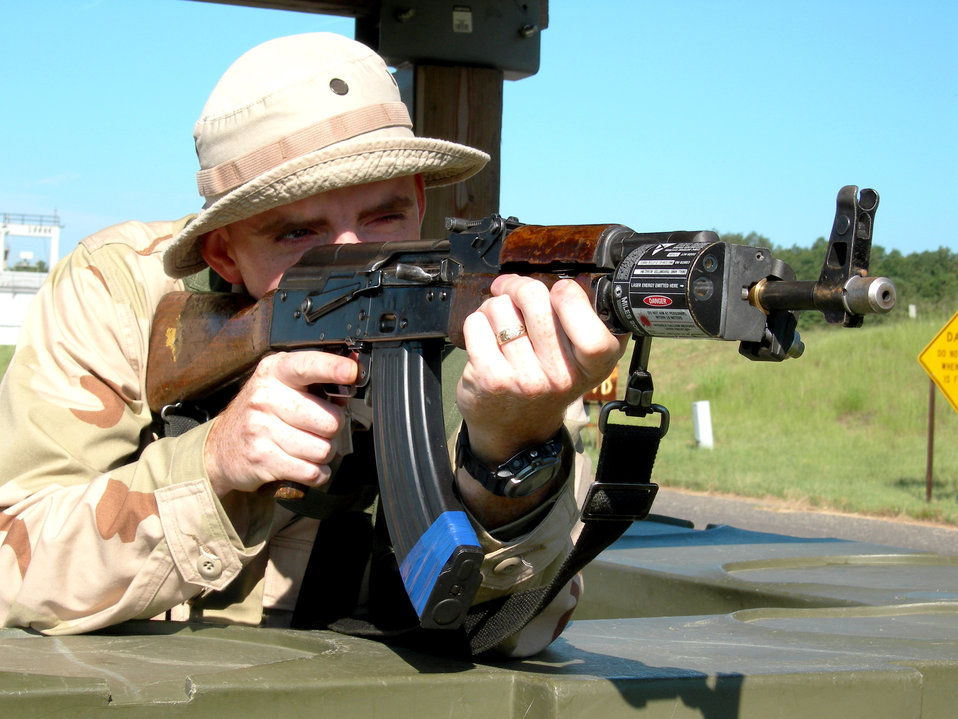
Airmen hone combat skills

Senior Airman David Branch portrays a private in a foreign national army during an Exercise Eagle Flag 06-3 scenario at Naval Air Engineering Station Lakehurst, N.J., on July 14. The exercise tests Airmen from various career fields on their expeditionary combat support skills. Airman Branch is assigned to the 52nd Combat Communications Squadron at Robins Air Force Base, Ga.